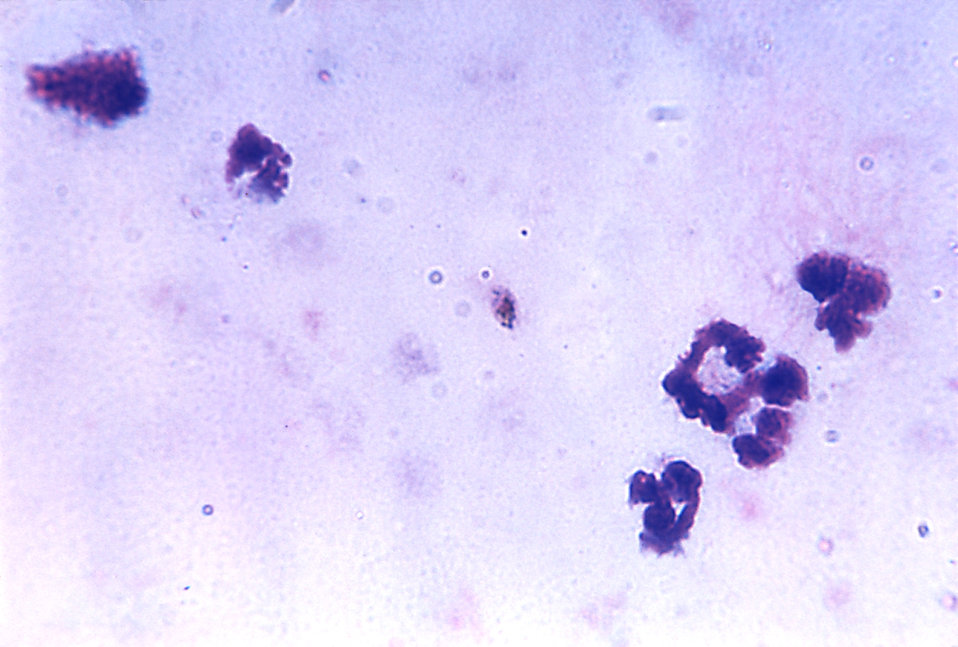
This blood smear photomicrograph reveals a Plasmodium falciparum gametocyte.